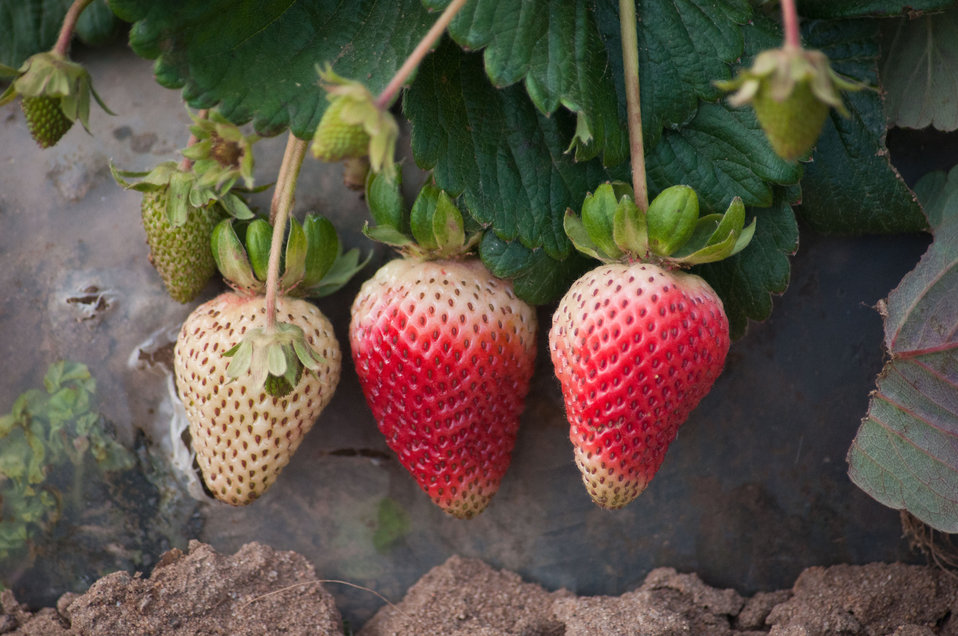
A strawberry farm near Castroville, CA on Thursday, June 16, 2011. When seasonal rains produce runoff, the silt that flows with it is caught in sediment basins. The basins have fast growing plants to hold the structure and a raised drainpipe allows the water to pool and silt to settle. The farm is within sight of the Monterey Bay National Marine Sanctuary, so it is important that silt does not reach the ocean waters. The grass has been trimmed down to show the contour and design of the basin during this dry time of the year. The roots are alive and the plants will grow back.